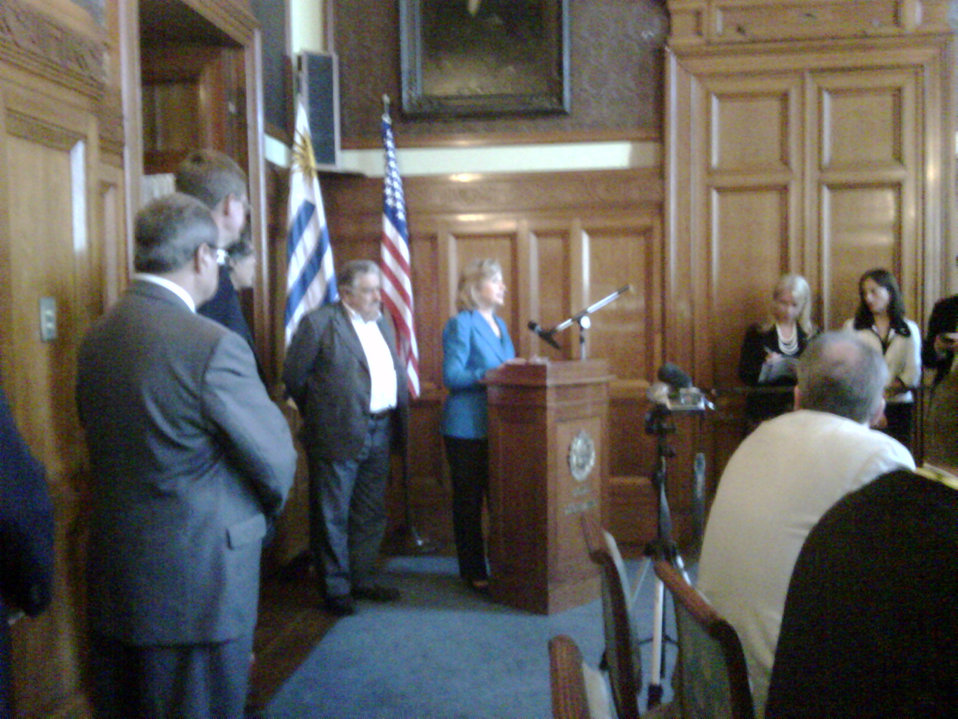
Press Conference in Uruguay

U.S. Secretary of State Hillary Rodham Clinton conducts a press conferene in Montevideo, Uruguay March 1, 2010.